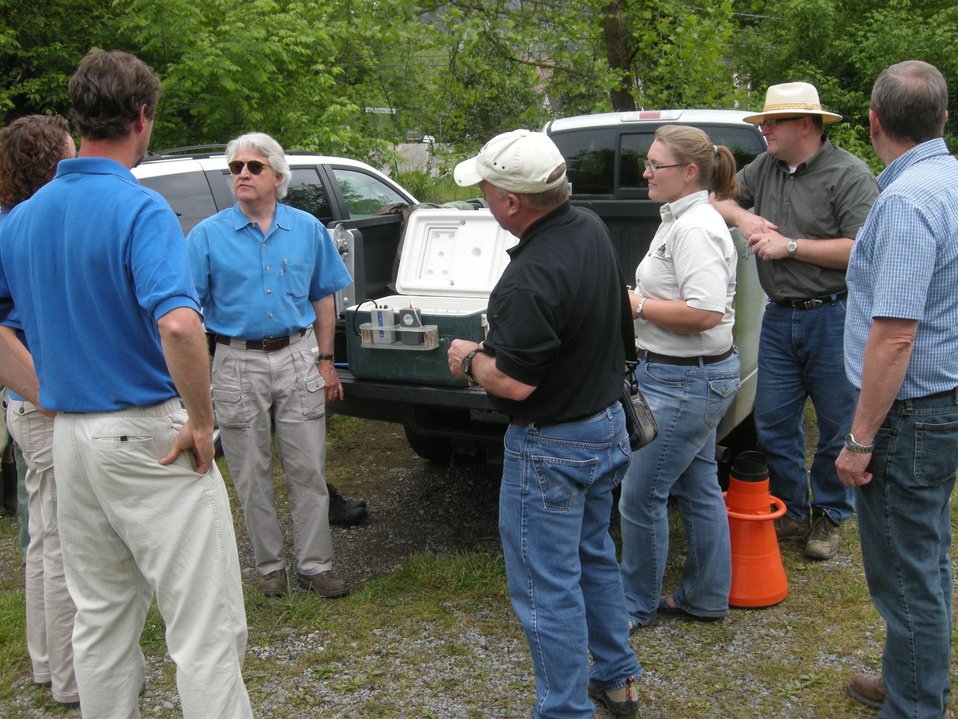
OSM Director meeting with U.S. Fish and Wildlife Service and the Virginia Department of Game and Inland Fisheries at Indian Creek

OSM Director Joseph Pizarchik and OSM staff joined biologists from the U.S. Fish and Wildlife Service (Service) and Virginia Department of Game and Inland Fisheries (VDGIF) on the banks of Indian Creek in Cedar Bluff, Virginia. The group discussed OSM’s role in overseeing mining activities and the importance of ensuring maintenance of water quality in southwestern Virginia, the nation’s top hotspot of aquatic biodiversity.